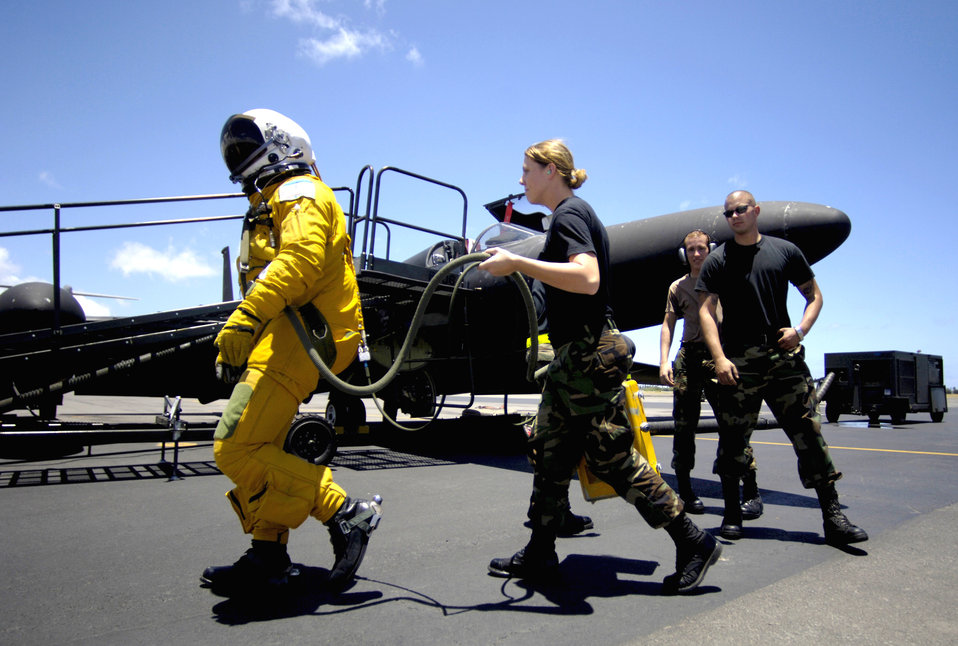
Dragon Lady face-lift

A pilot from the 99th Reconnaissance Squadron at Beale Air Force Base, Calif., walks to his U-2 Dragon Lady at Hickam AFB, Hawaii, on Tuesday, June 13. The aircraft is en route to South Korea. U-2s are undergoing a $1.5 billion upgrade. Cockpit instruments will be modernized with full-color displays that replace gauges and dials with state-of-the-art, touch-screen technology.